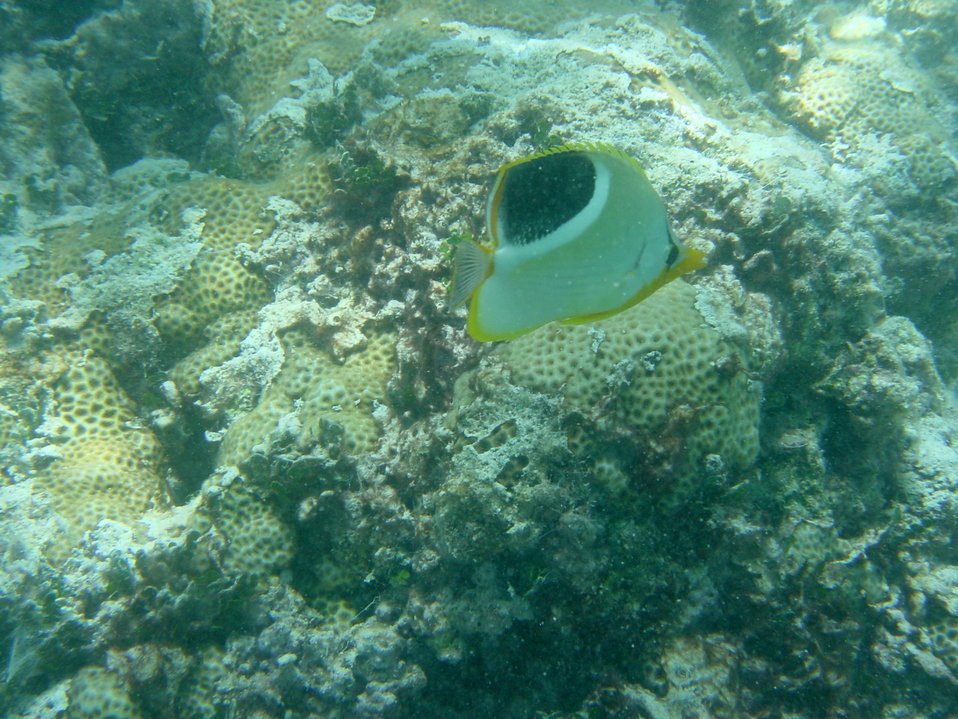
A saddleback butterfly fish (Chaetodon ephippium) in the foreground